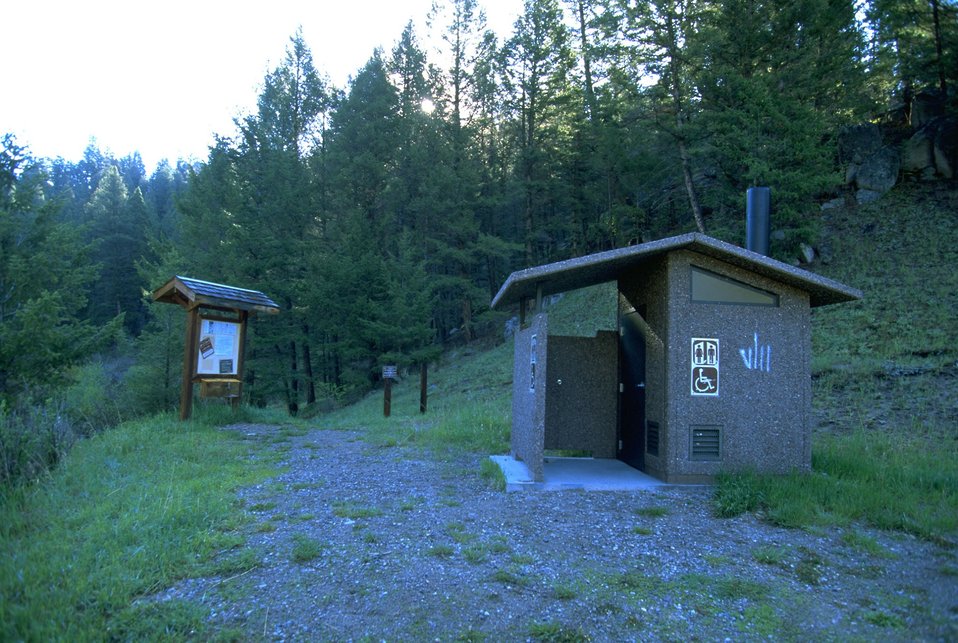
Outhouse and Kiosk in the Humbug Spires Wilderness Study Area